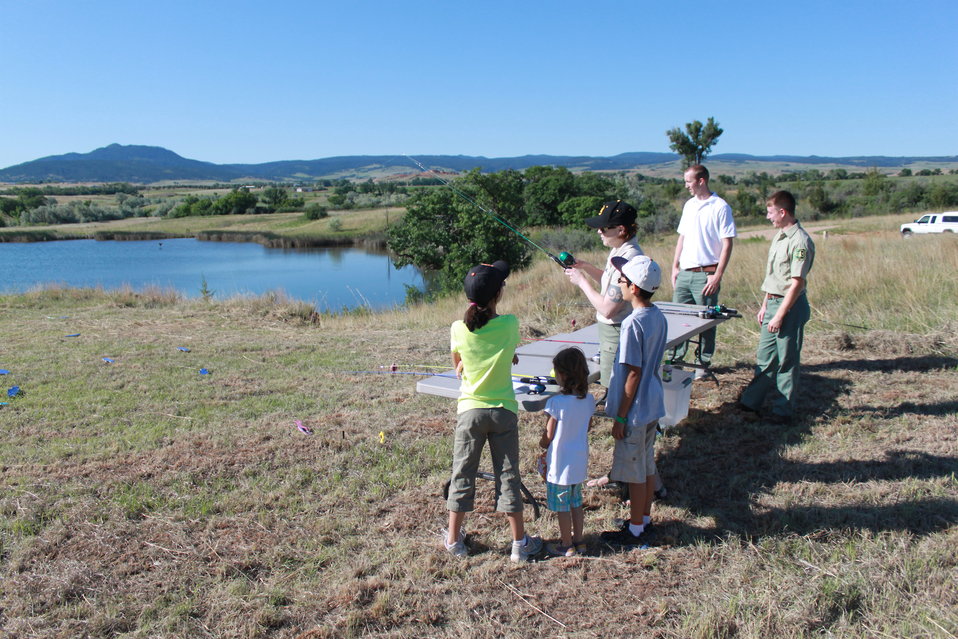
Family Fishing Fun

Founder of the U.S. Forest Service, Gifford Pinchot, in his 1939 book 'Fishing Talk' encouraged his readers to always, 'take the youngster along.' Toward that end, Black Hills National Forest staffers teach casting to a group of kids at a National Fishing and Boating Week event at Mirror Lake, near Spearfish, South Dakota. The event was co-sponsored by the D.C. Booth Historic National Fish Hatchery & Archives.